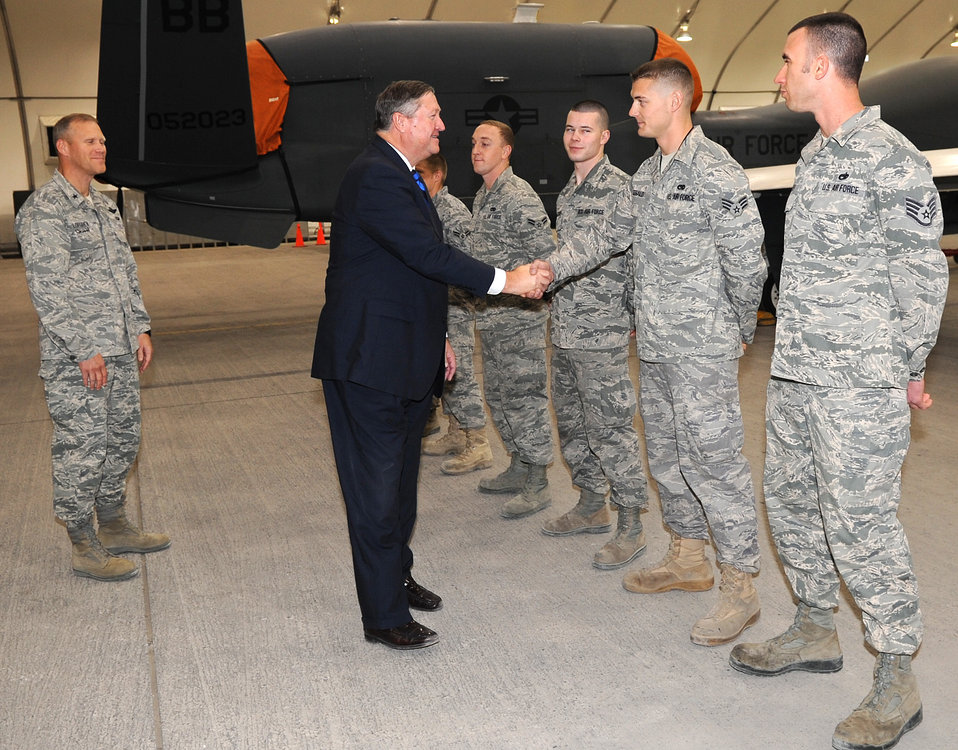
SecAF visits 380th AEW

SOUTHWEST ASIA - Secretary of the Air Force Michael Donley meets with RQ-4 Global Hawk maintainers Dec. 23, 2011. During his two-day tour of the 380th Air Expeditionary Wing, Airmen, Soldiers and Sailors briefed the SecAF about current and future operations.